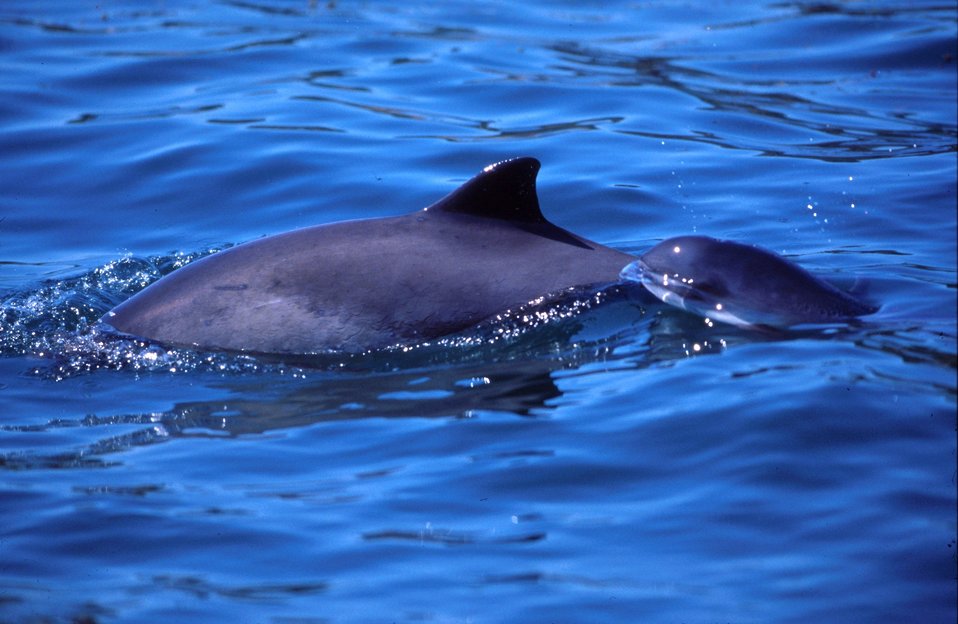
Small cetacean species.